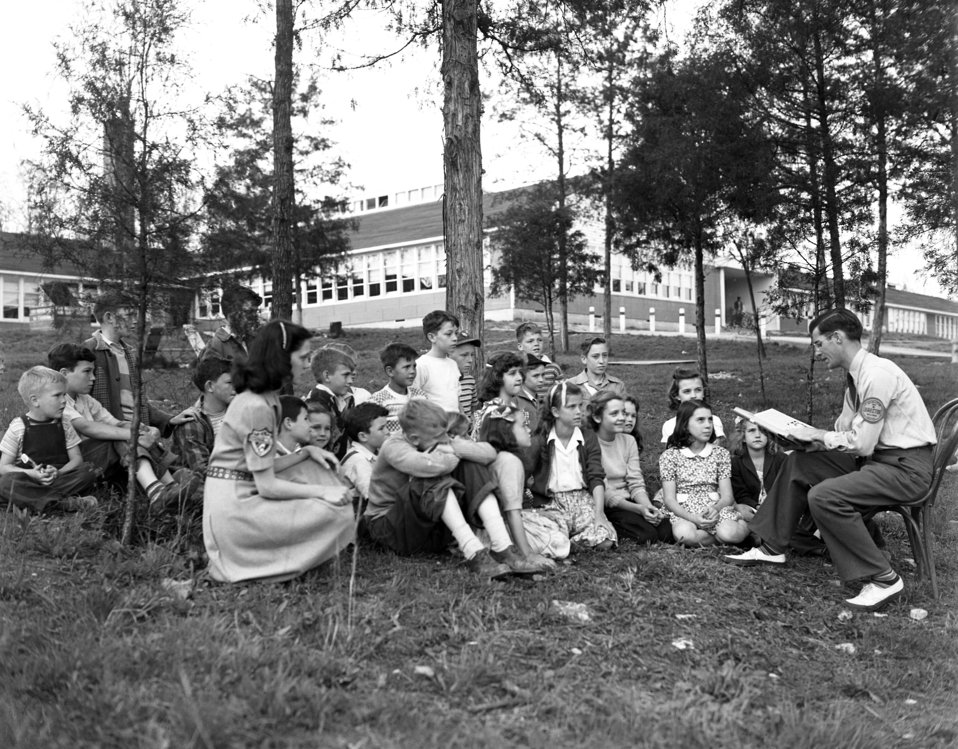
Playground Activity for Recreation Welfare Oak Ridge 1947

3414-12 DOE photo Ed Westcott 4-17-1947 Oak Ridge Tennessee